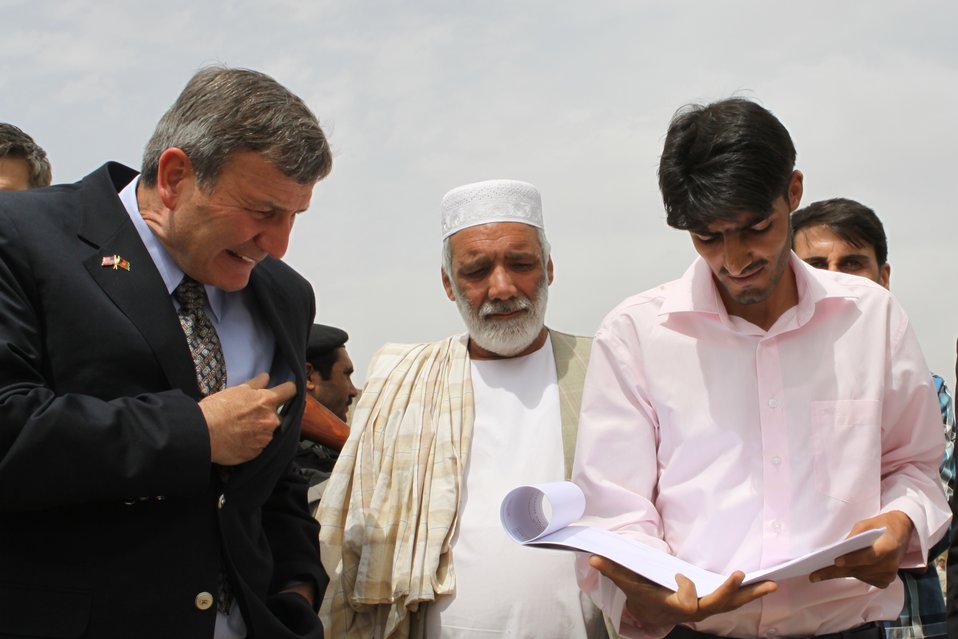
100525 Hirat Marble Conference 607